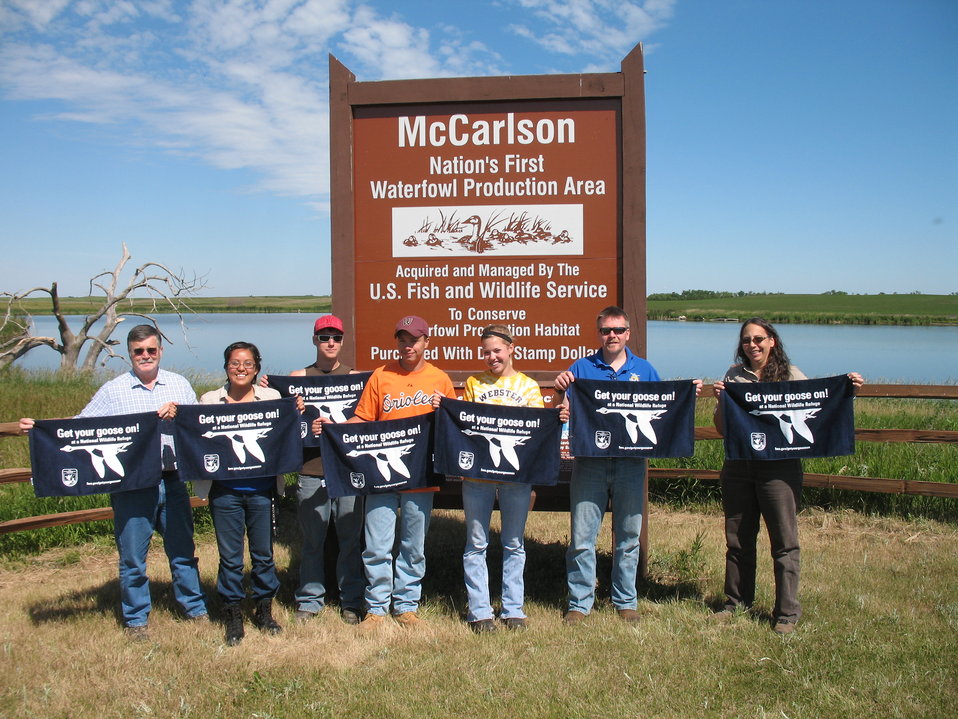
Get Your Goose On!

The Waubay NWR Youth Conservation Corps poses in front of the McCarlson Wetland Protection Area sign - the first WPA in the nation!